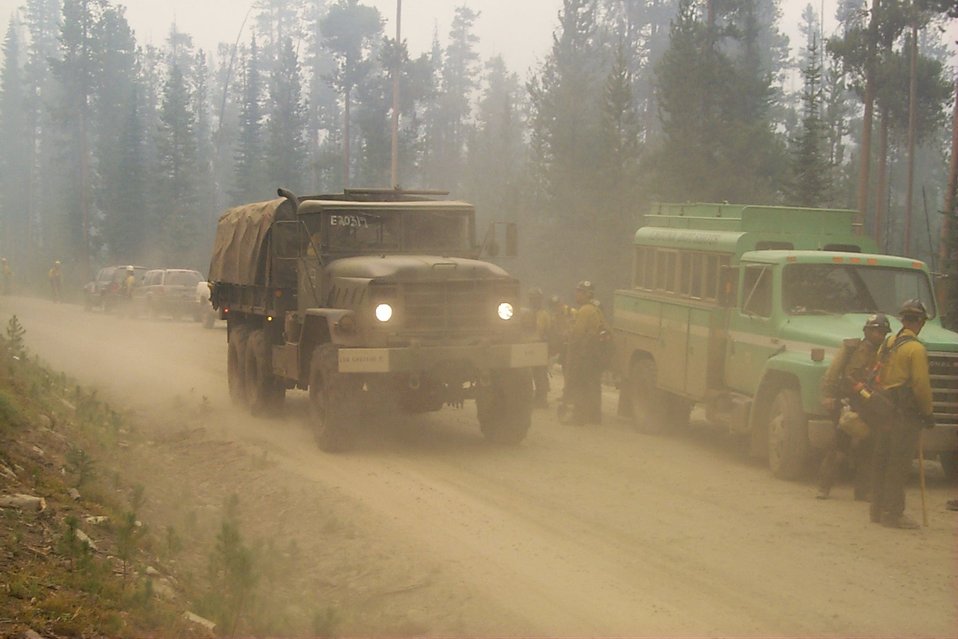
Transport Fire Clearwater Fire Salmon Field Office USRD Upper Snake River District